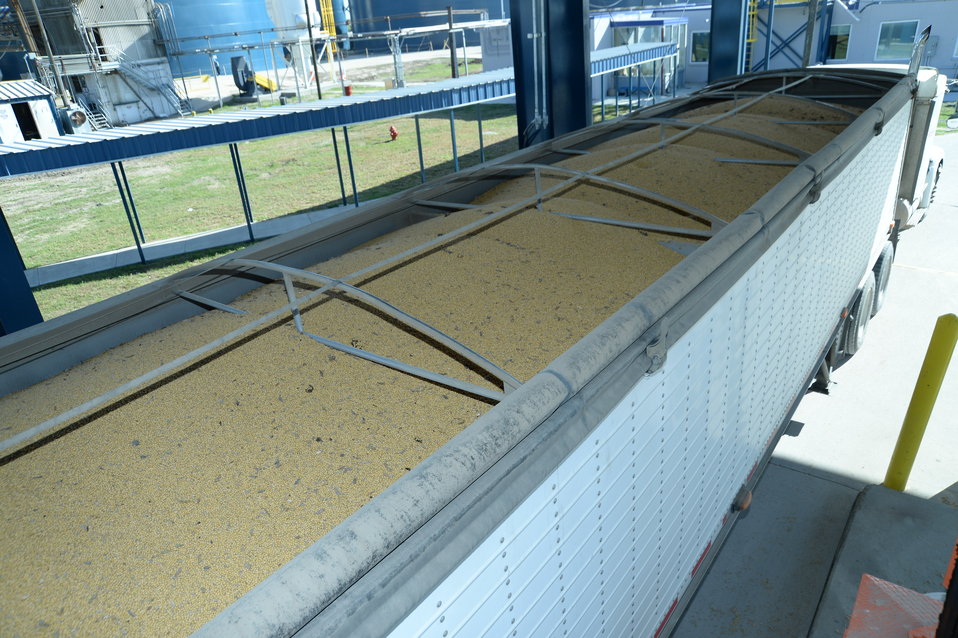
A sample of grain is removed from a barge for testing at the U.S. Department of Agriculture’s (USDA) Grain Inspection, Packers and Stockyards Administration (GIPSA) Federal Grain Inspection Service (FGIS) laboratory in New Orleans, LA on Tuesday, Nov. 19, 2013.